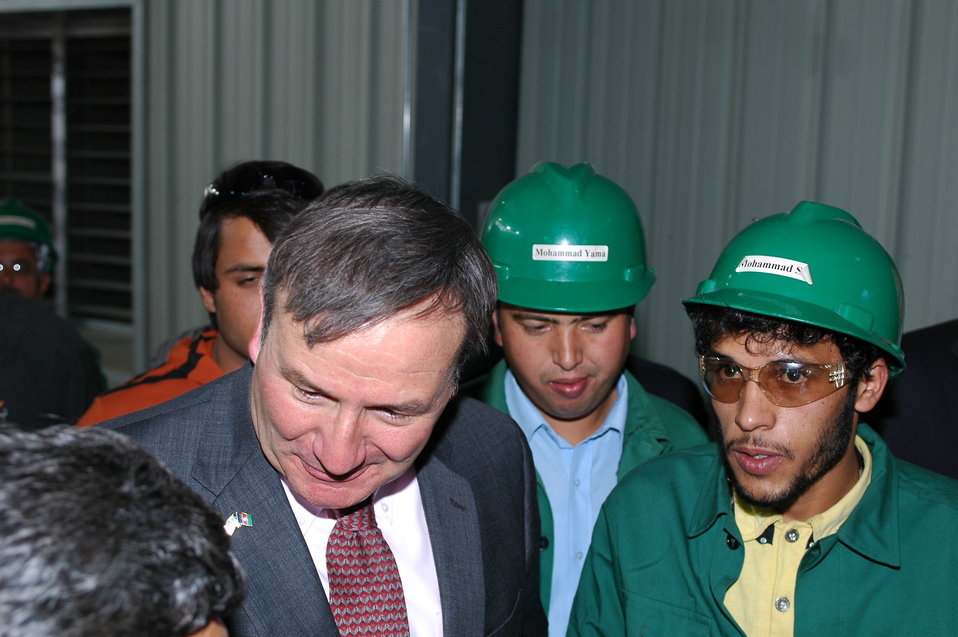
105 MW Tarakhil Power Plant Handover